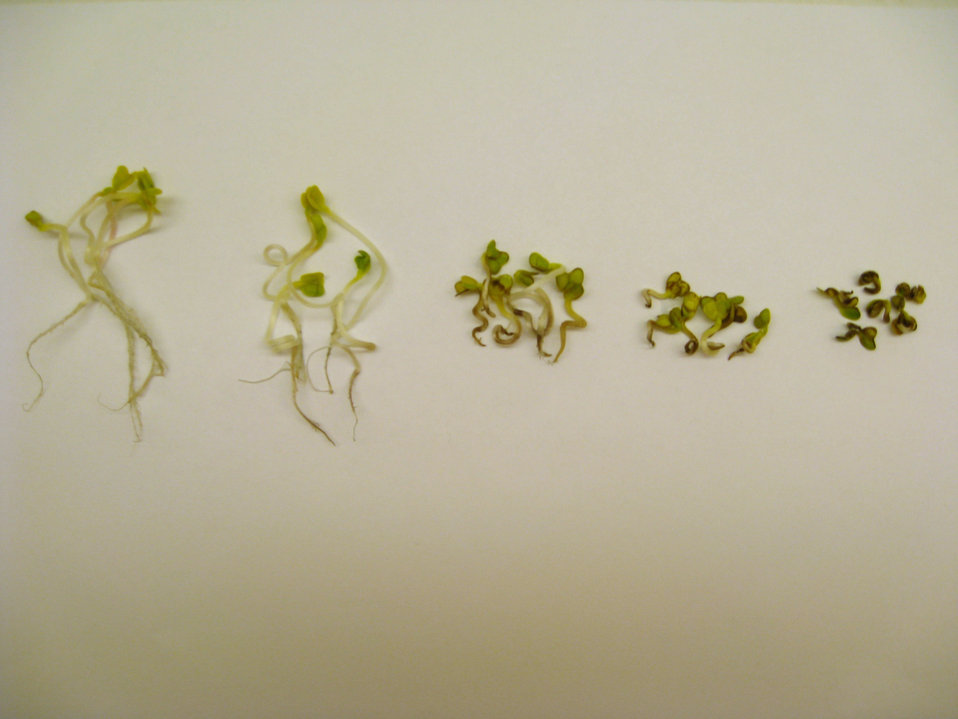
Nanoparticles; Plant DNA Damage

Graphic showing that increasing exposure to cupric oxide bulk particles (BPs) and nanoparticles (NPs) by radish plants also increases the impact on growth with NPs showing the largest impact. From left to right, the exposure concentrations are 0; 100 parts per million (ppm) BPs; 1,000 ppm BPs; 100 ppm NPs; and 1,000 ppm NPs (showing a severely stunted plant).